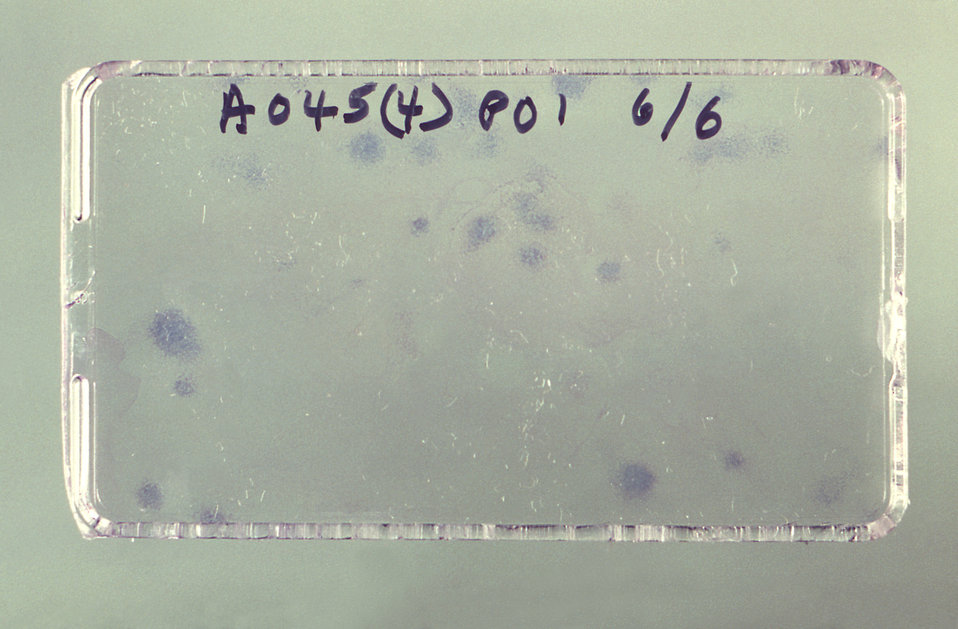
This photograph depicts a 25 sq. cm. Falcon� Flask containing stained colonies of amniotic fluid cells elements.